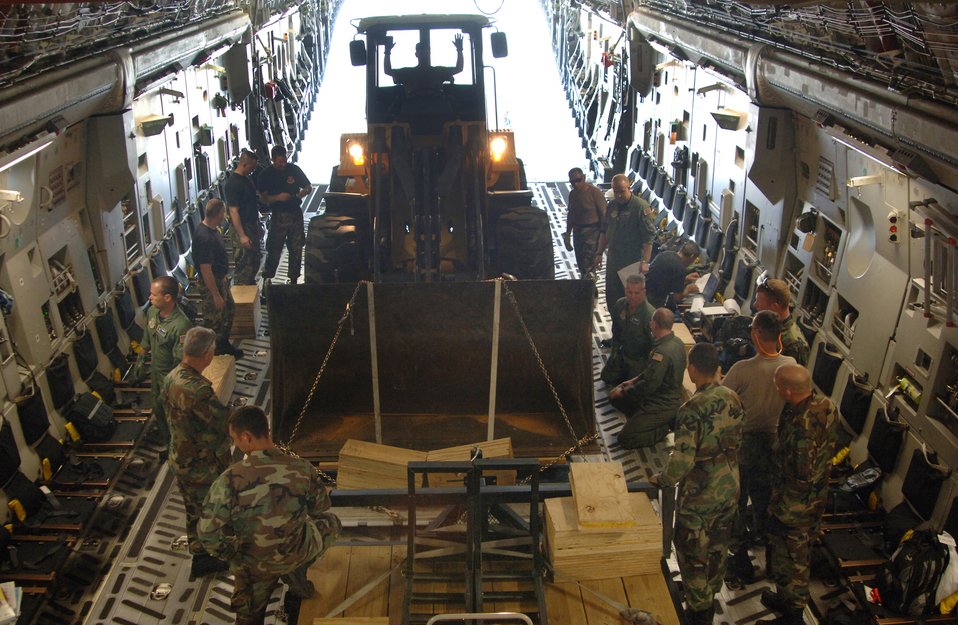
Reserve aircrew helps fight war on drugs

Airmen from the 300th Airlift Squadron at Charleston Air Force Base, S.C., and the 433rd Civil Engineer Squadron at Lackland AFB, Texas, load cargo at a Saint Lucia airport for a return flight on Sunday, April 9, 2006. The aircrew delivered construction materials and Reserve civil engineers who are building an operations center and barracks for the police force in support of Saint Lucia's counter-drug operations.